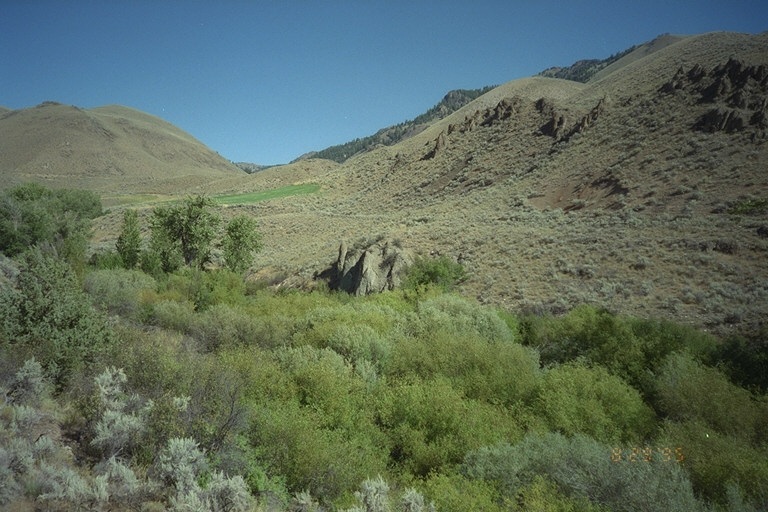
Riparian area Public Lands Salmon Field Office UCSC Upper Columbia Salmon Clearwater District